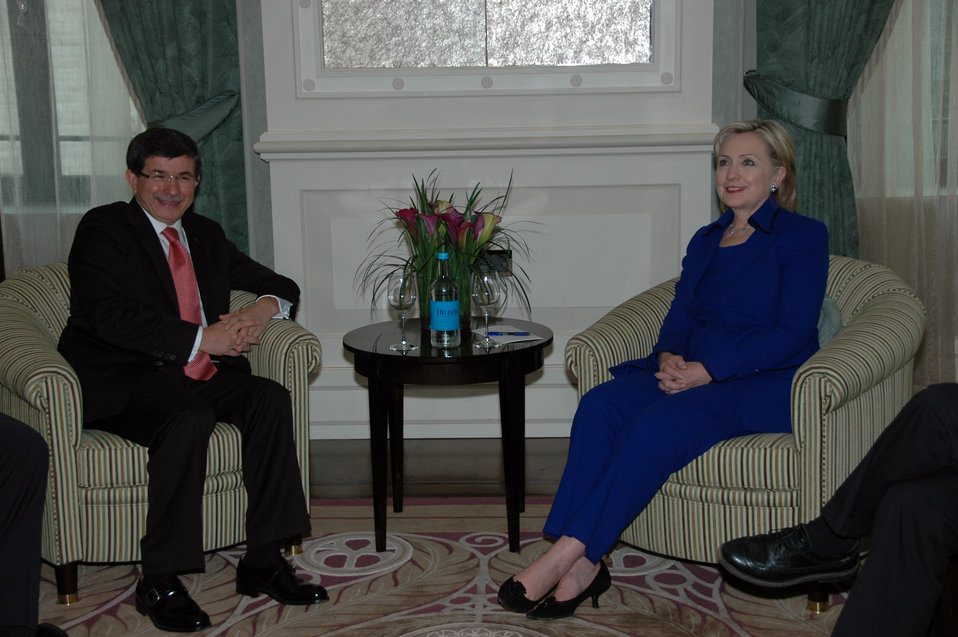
Secretary Clinton Meets With Turkish Foreign Minister

U.S. Secretary of State Hillary Rodham Clinton with Turkish Foreign Minister Ahmet Davutoglu in Zurich, Switzerland October 9, 2009.